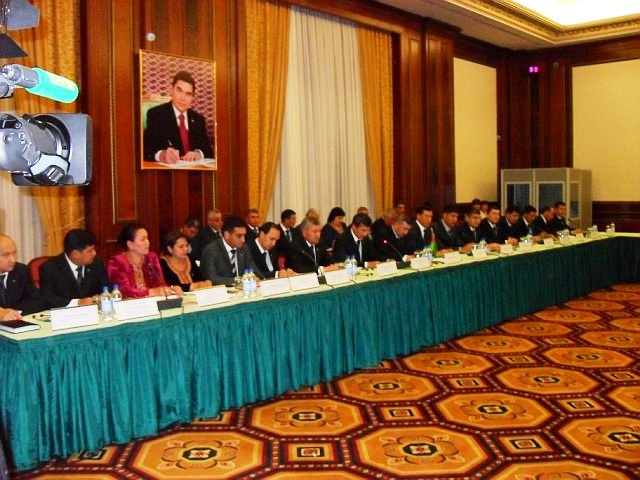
Assistant Secretary Blake Leads Official Delegation to First Annual Bilateral Consultations With Turkmenistan Government

U.S. Assistant Secretary of State for South and Central Asian Affairs Robert O. Blake, accompanied by U.S. Assistant Secretary for Democracy, Human Rights and Labor Michael Posner and Director for Central Asia at the National Security Council, Kurt Donnelly, leads a large official delegation to the first Annual Bilateral Consultations (ABCs) with the Government of Turkmenistan in Ashgabat on June 16, 2010.